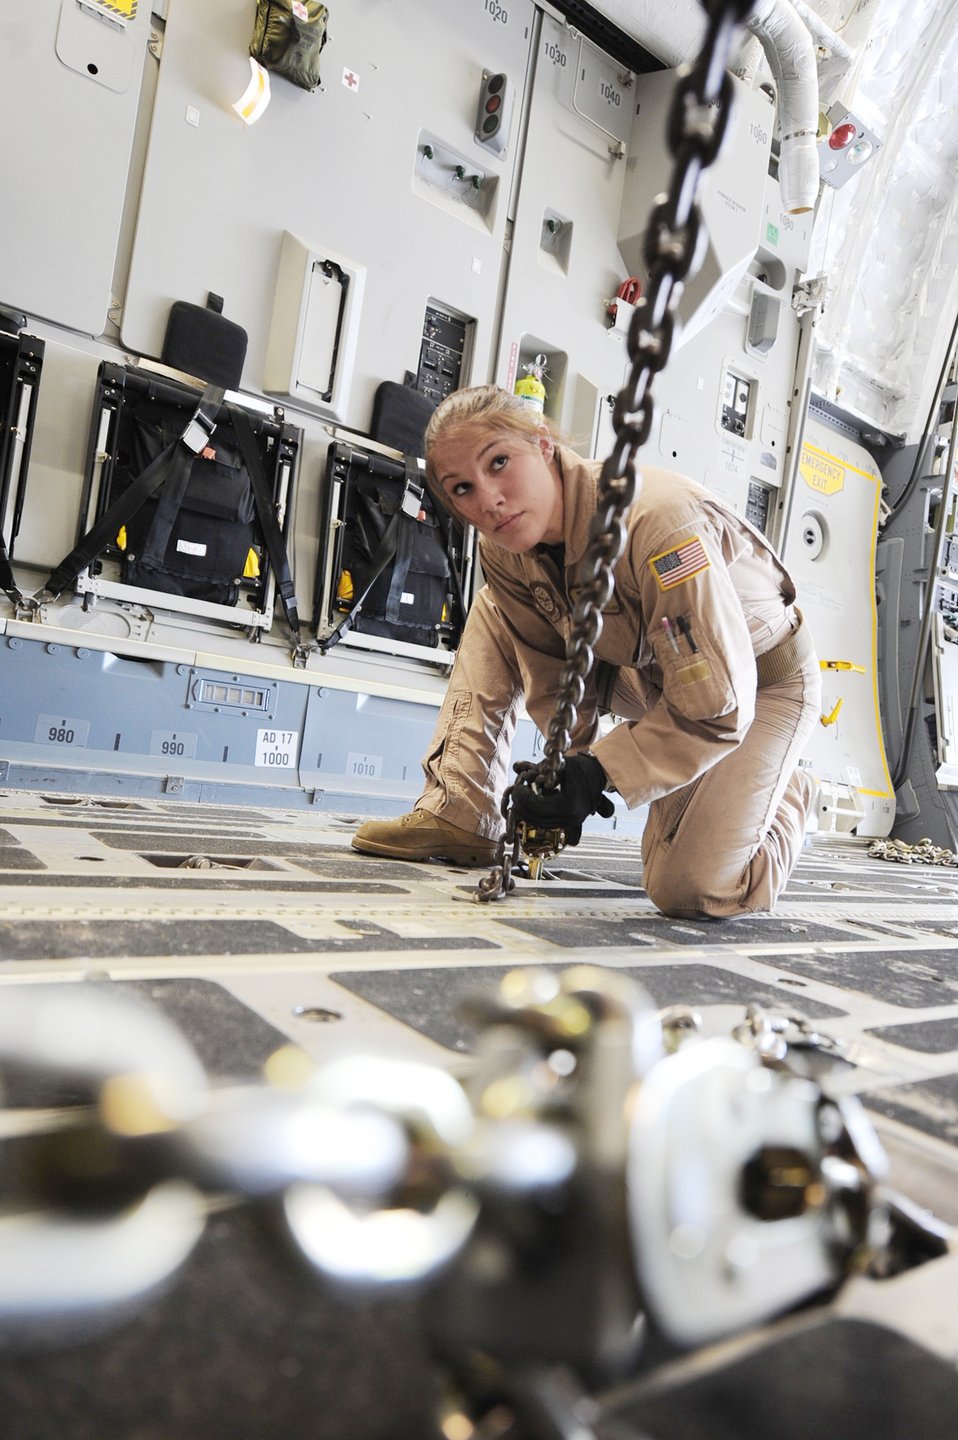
C-17 flight commemorates Women's History Month

Senior Airman Christine Collier, 816th Expeditionary Airlift Squadron loadmaster, secures a mine-resistant, ambush-protected vehicle in a C-17 Globemaster III March 10, 2010, at an air base in Southwest Asia. Airman Collier was part of an all-female crew in honor of Women's History Month and is deployed from the 14th Airlift Squadron at Charleston Air Force Base, S.C.